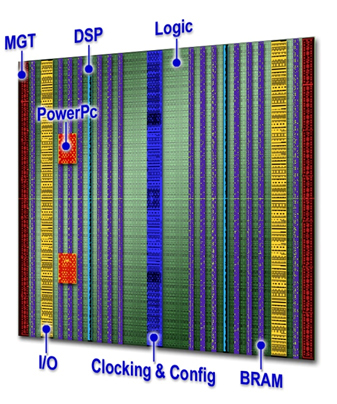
New computer chip cuts cost, adds efficiency to space systems

The layout of the Virtex-5 field programmable gate array, consisting of the various functions imbedded in the columnar architecture, is displayed.